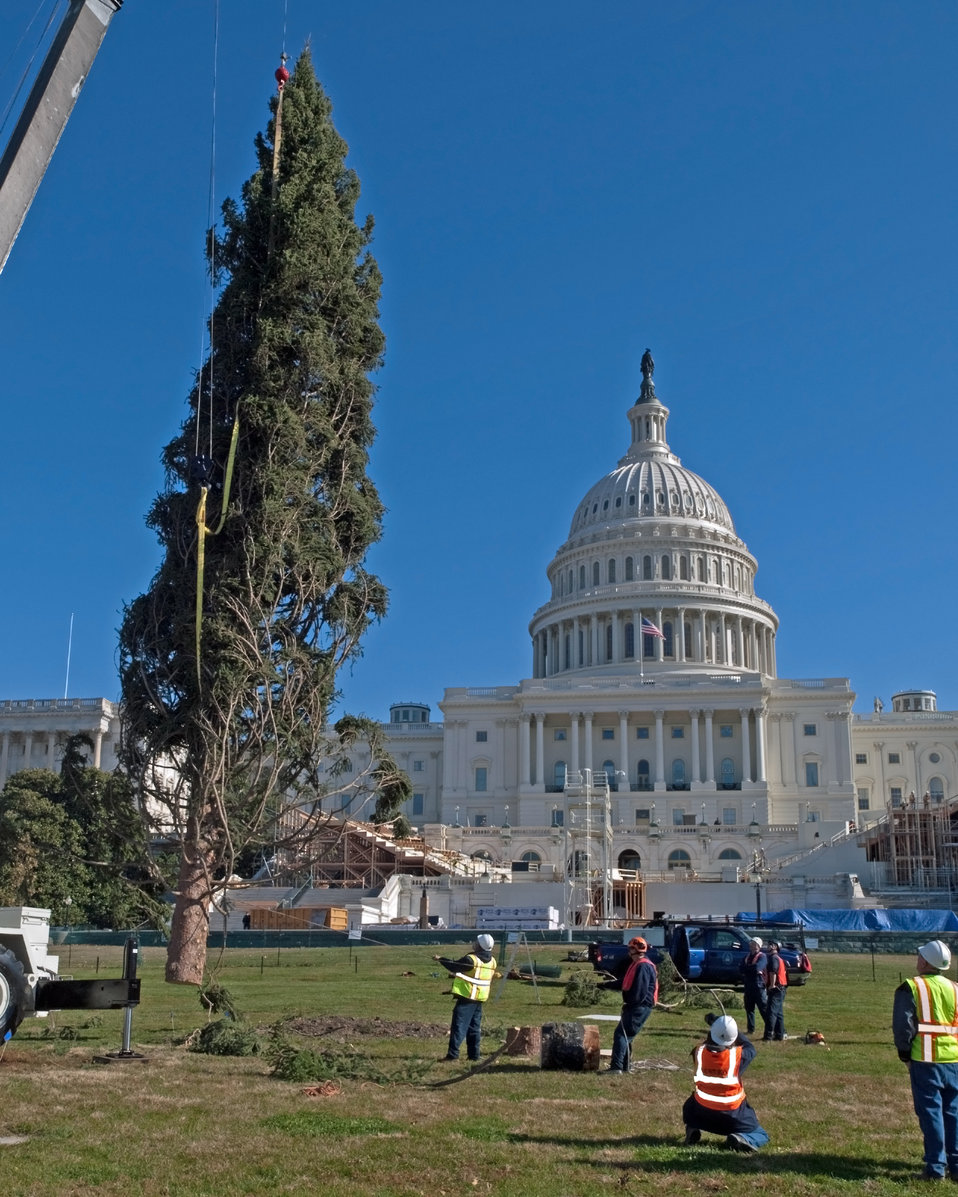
Members of the Capitol grounds crew place the 2012 Capitol Christmas Tree on the west lawn of the Capitol in Washington, D.C. on Nov.26, 2012. The 73-foot Englemann spruce traveled from the White River National Forest in Colorado.